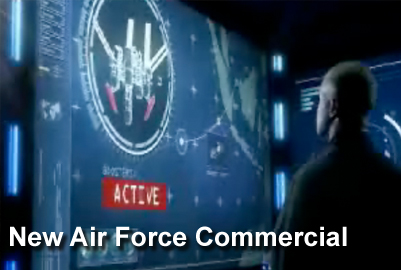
New Air Force commercial

The newest Air Force commercial,